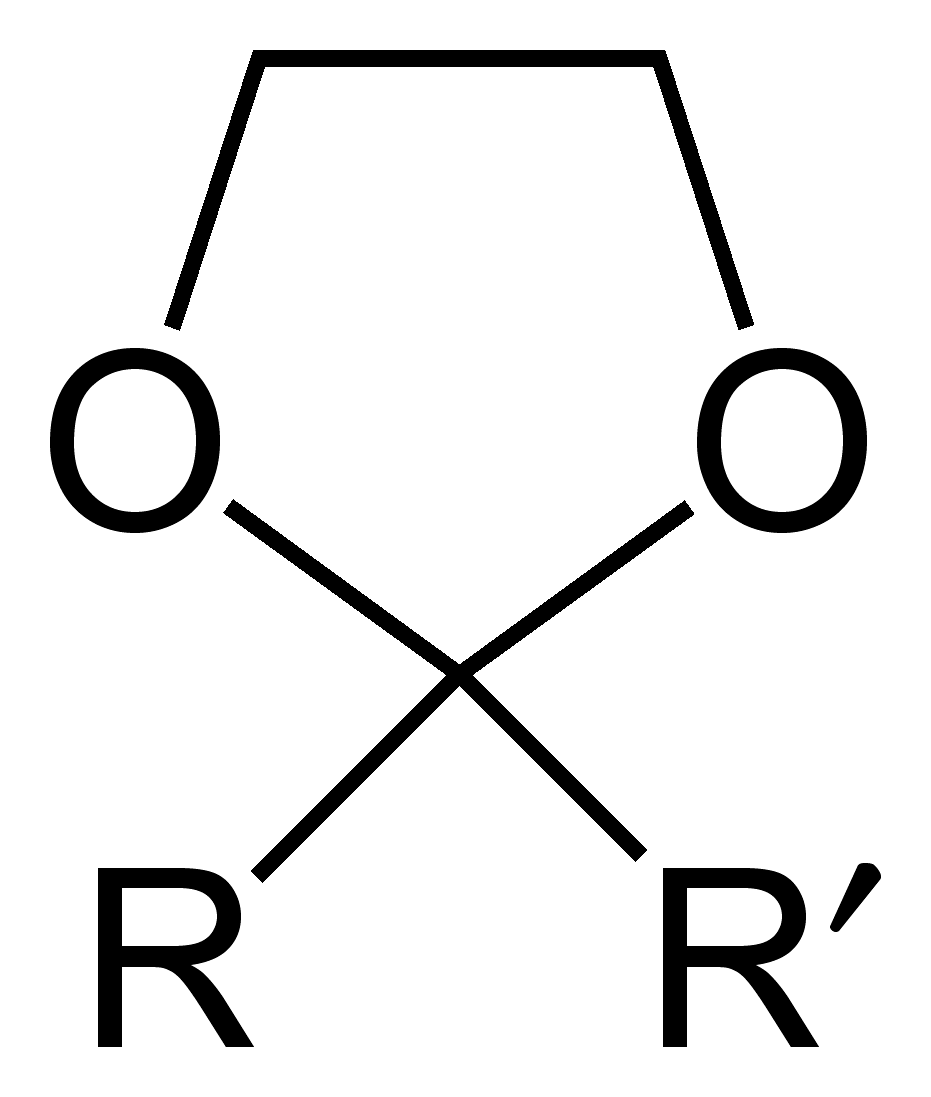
Skeletal formula of a general 1,3-dioxolane derivative